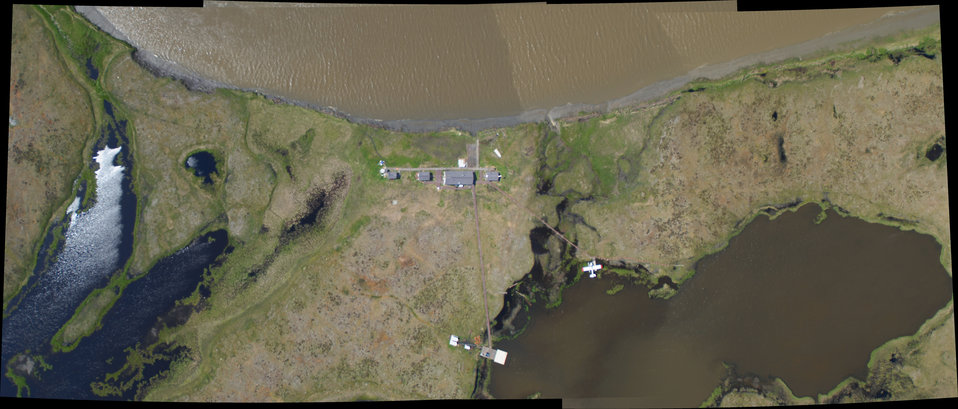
Panorama of Kanaryarmiut Field Station

This is one of the locations that is used by refuge staff and other agencies to stage camps, house camps, etc.

USFWS Yukon Delta NWR